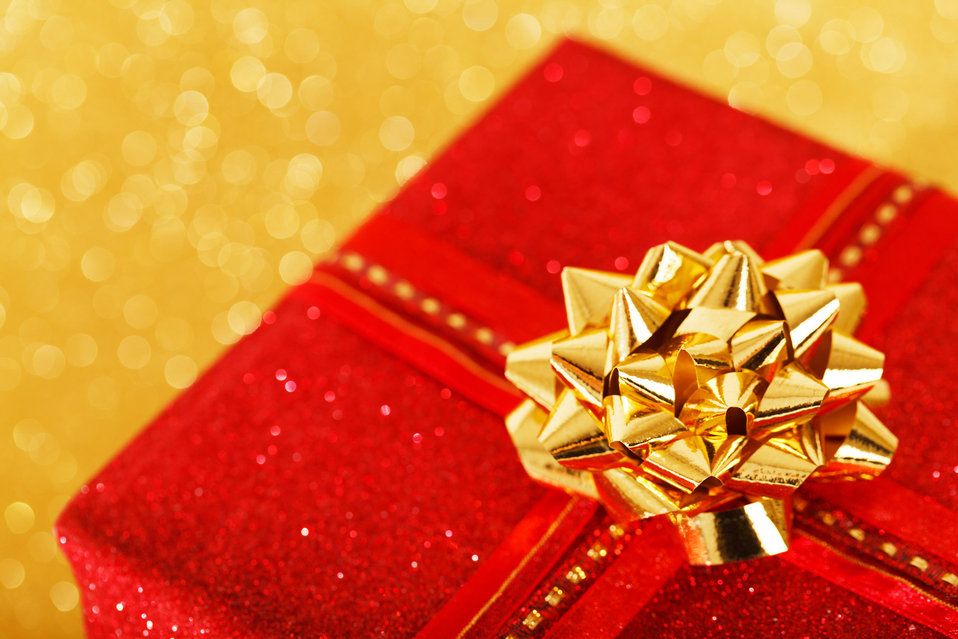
Red christmas present on a blurred golden background.